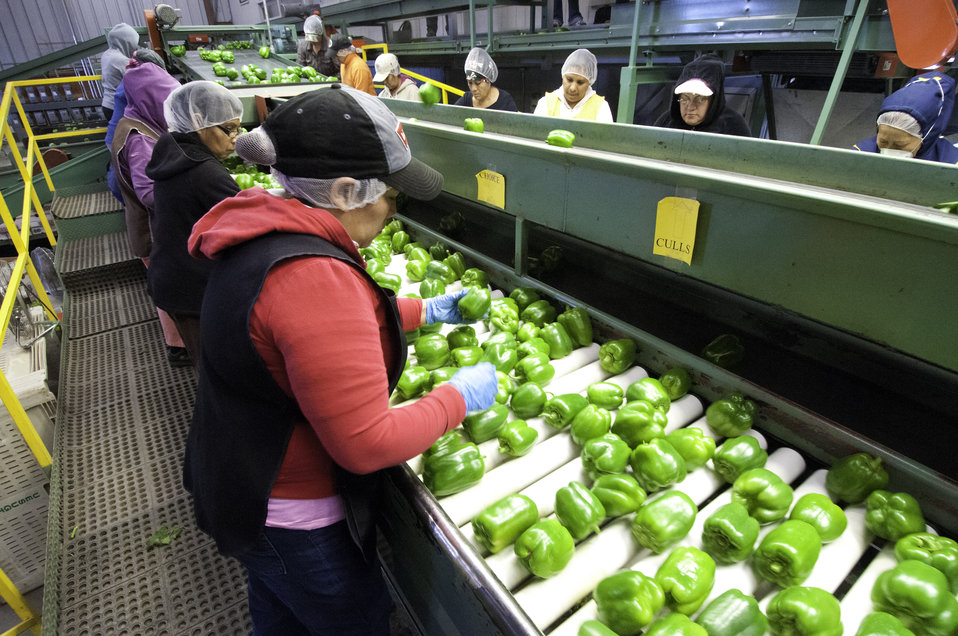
Migrant workers process green peppers on Uesugi Farms in Gilroy, CA on Wednesday, Aug. 28, 2013.